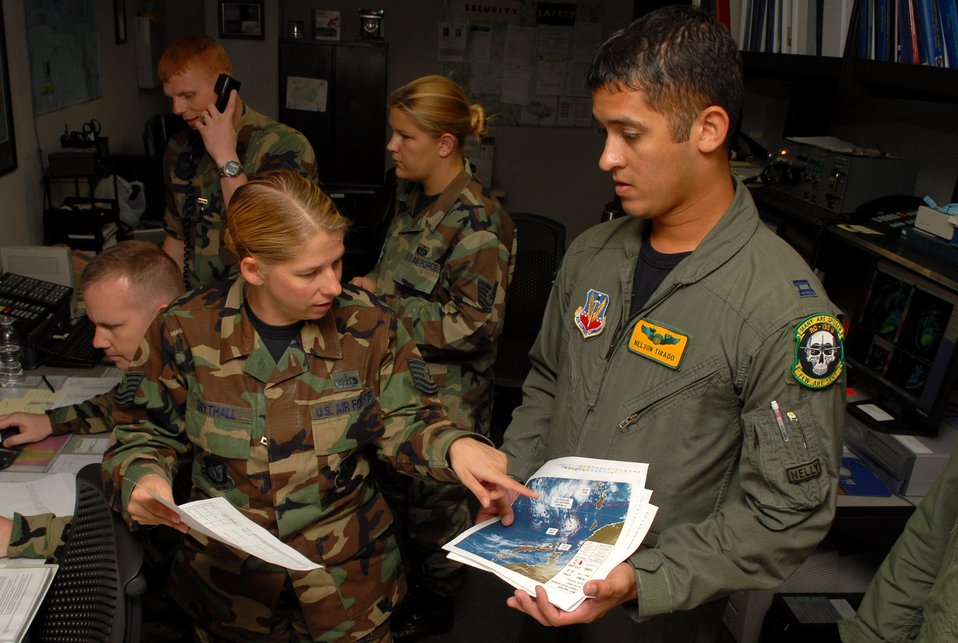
Typhoon Nari heads for Okinawa

Tech. Sgt. Tonya Trythall shows Capt. Nelson Tirado the storm path of Typhoon Nari path Sept. 14 at Kadena Air Base, Japan. Base members prepared for the typhoon by moving jets and equipment from the flightline into protective aircraft shelters and evacuated many aircraft to locations throughout the Pacific. The typhoon is scheduled to hit the island the evening of Sept. 14 with 45 knot winds gusting to 65 knots. Sergeant Trythall is assigned to the 18th Operations Support Squadron Weather Flight and Captain Tirado is an aircraft commander with the 82nd Reconnaissance Squadron.